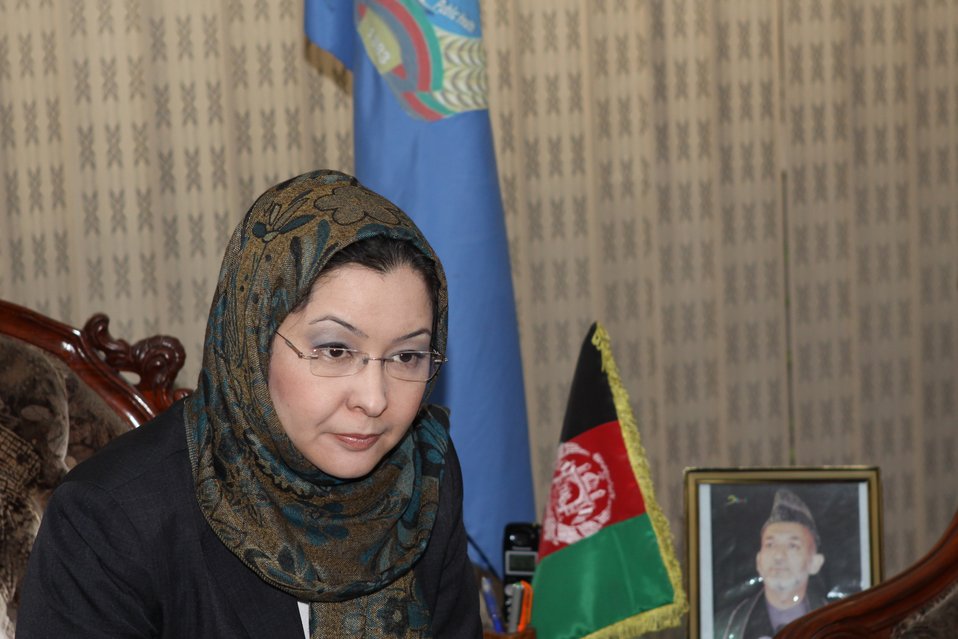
Community Health Workers Celebrated

Kabul, Afghanistan | December 5, 2010 — In support of the United Nations designated International Volunteer Day for Economic and Social Development, Afghanistan’s Ministry of Public Health celebrated its annual Community Health Worker Day today. Acting Minister of Public Health Dr. Suraya Dalil, USAID Senior Deputy Mission Director Robert Hellyer, other government officials, and international donors joined in recognizing the critical contribution of community health workers in Afghanistan and encouraging them to continue their voluntary support to their communities.
The event praised the contributions of the more than 22,000 volunteers throughout the country who deliver community level health-education, counseling, and services out of village health posts located in private homes. The Ministry of Public Health envisioned that community-based healthcare programs will actively encourage communities and families to adopt healthy lifestyles and behaviors, and provide families access to high quality and socially acceptable preventative medicine and life-saving services.
“We have 22,000 community health workers in Afghanistan that are able to implement the basic and standard medicines. They all have been trained through a job description,” said Minister Dalil. Addressing the health workers, she added, “I am proud and feel powerful that I have people like you.”
USAID-funded health projects collaborate closely with the Ministry of Public Health to improve the health and nutritional status of Afghans, provide quality primary healthcare, and promote healthy behaviors at the community and household-levels. USAID supported the training of more than 9,000 of the volunteer community health workers currently working in Afghanistan.
“On behalf of the American people, I congratulate the Community Health Workers for their diligence to gain the skills and knowledge necessary to serve their communities in this important role,” said USAID Senior Deputy Mission Director Hellyer. “USAID strongly supports community based health care and believes that quality community-based health services are essential to reaching Afghanistan’s Millennium Development Goals.”
To support the Basic Package of Health Services, USAID assisted in developing the community health worker training manual, helped train community health worker supervisors and master-trainers, facilitated in-service training, and produced and developed reporting tools, job aids, and education materials.